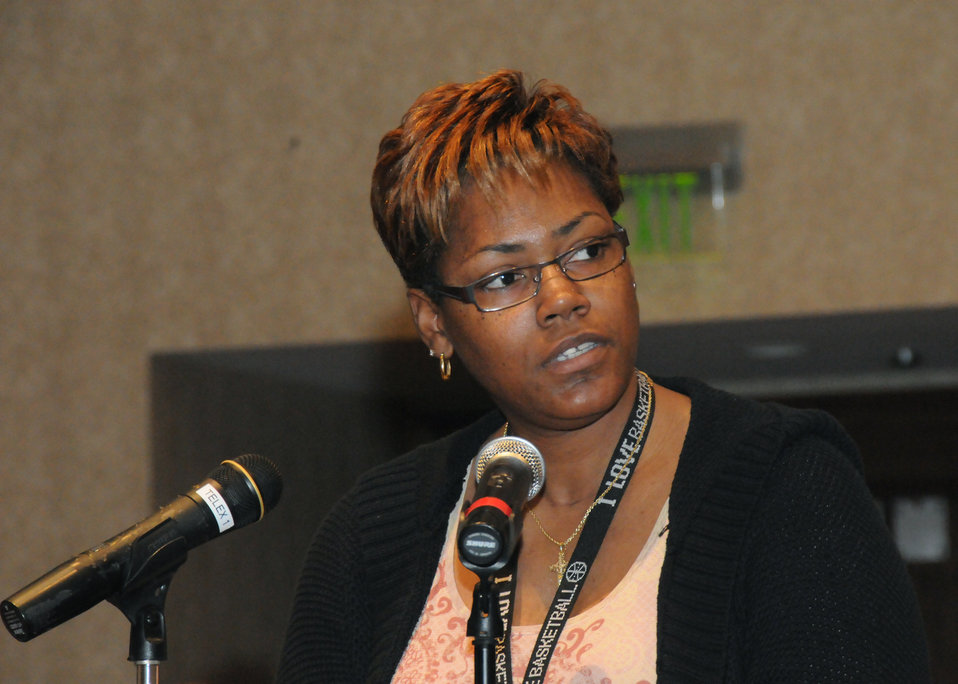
The U.S. Department of Agriculture (USDA) held the third of six Cultural Transformation Employee listening sessions in Kansas City, MO, on Wednesday, April 14, 2010. USDA employees expressed their concerns with issues at the Department and made suggestions for correcting them and improving the image of USDA. USDA photo 10di1308-112.